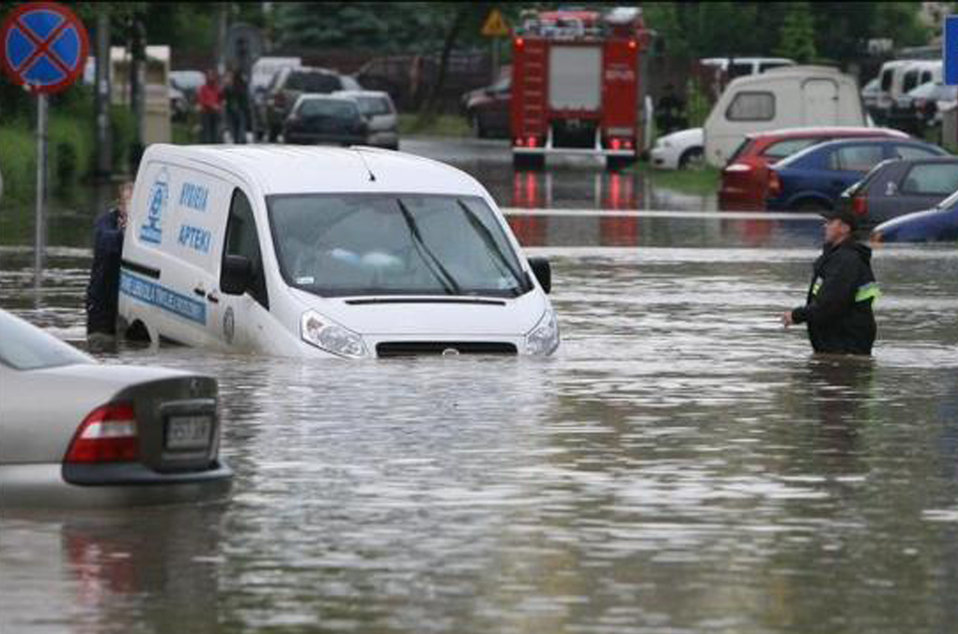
Arkansas Flood Photo of Cars Under Water